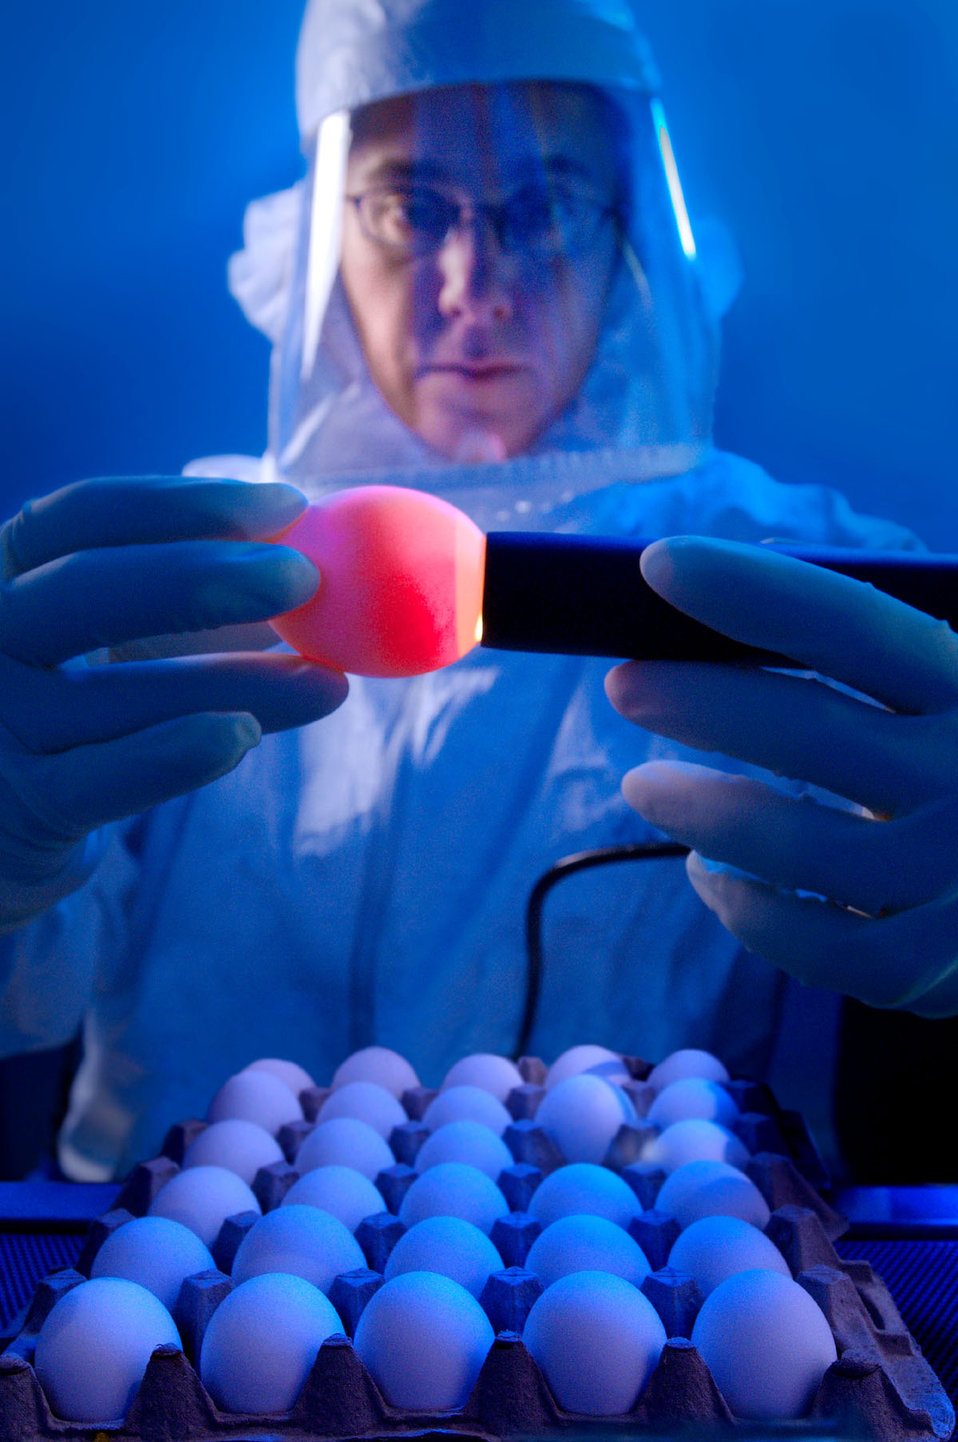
This 2008 photograph depicted a CDC microbiologist, as she was demonstrating how one properly 'candles' an embyonated chicken egg, which employs a very bright light that is either placed behind the egg, such as was done throughout history by using a candle, hence the name, or employing more modern methods, using a powerful lamp placed against the broad end of the egg, as was the case here. In this way, the contents of the egg are revealed through the translucent shell. By using this procedure, she was able to access the viability of each egg used in the isolation of influenza viruses.